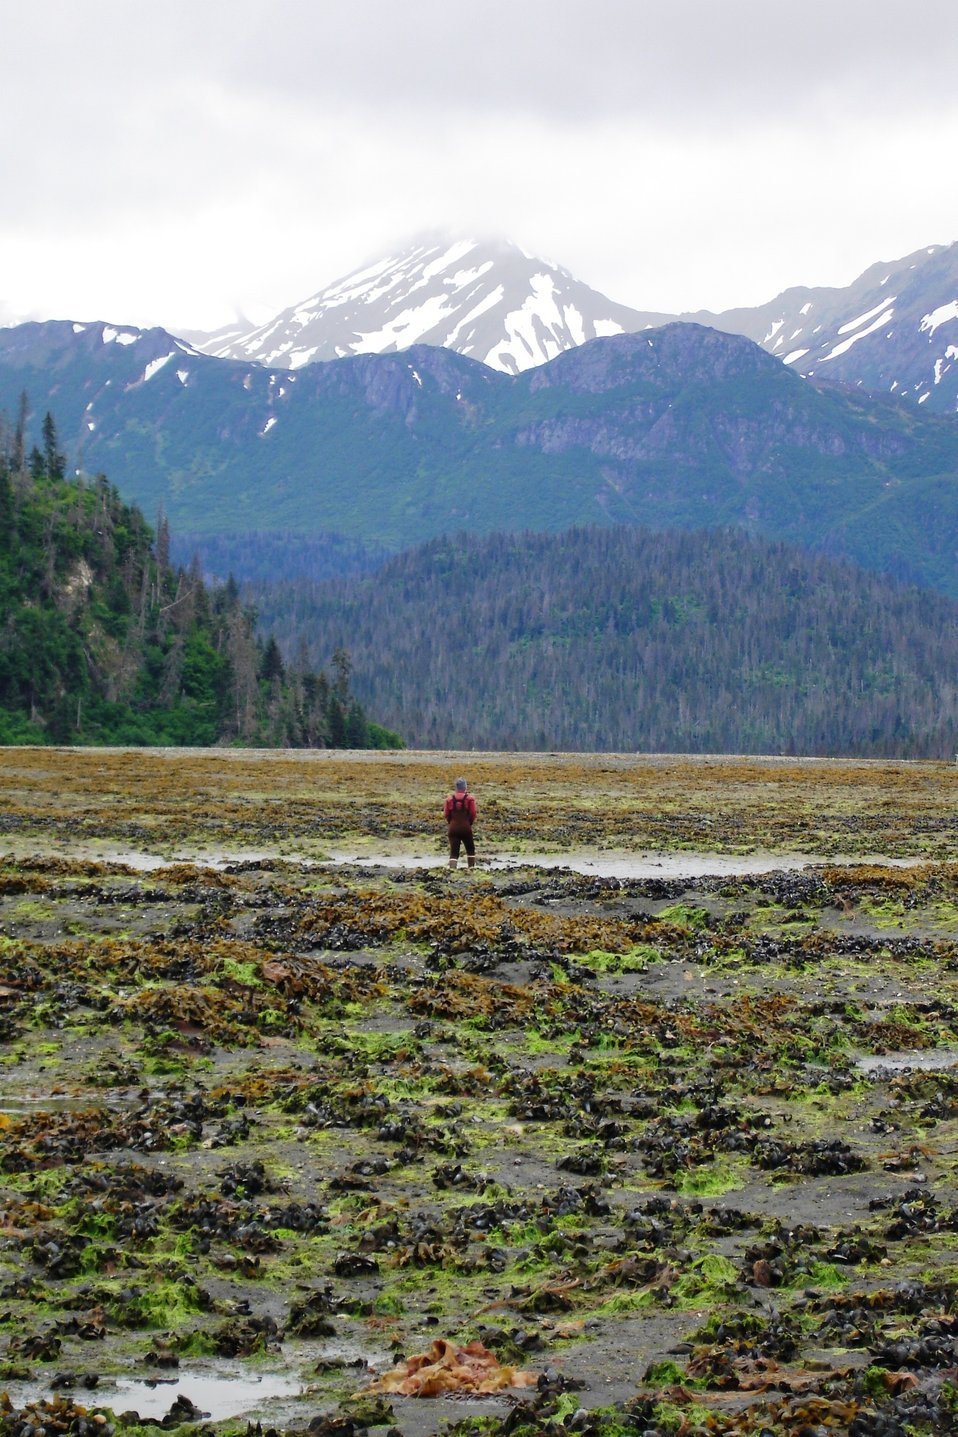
CCFHR researcher Carolyn Currin investigates China Poot at low tide.